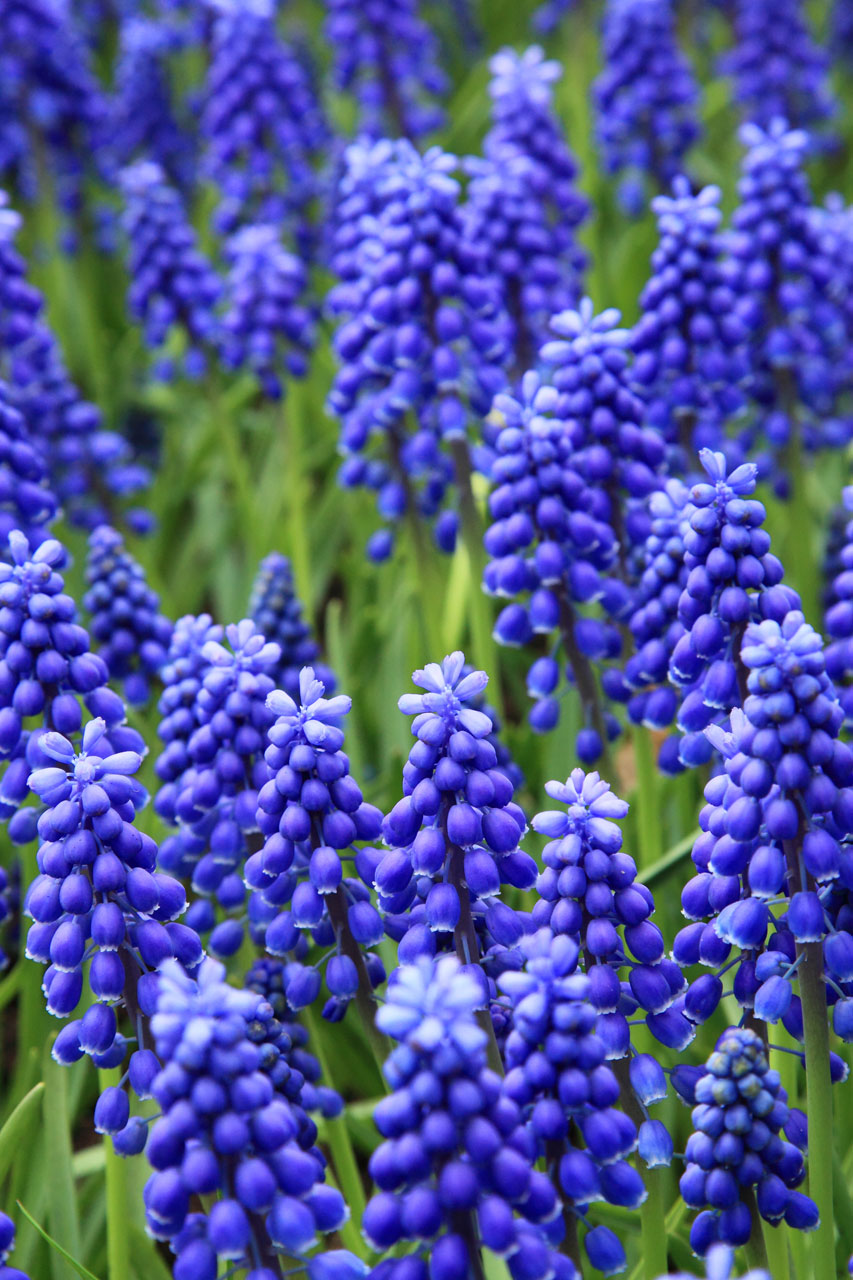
Grape hyacinths

Grape hyacinth flower bed in keukenhof.